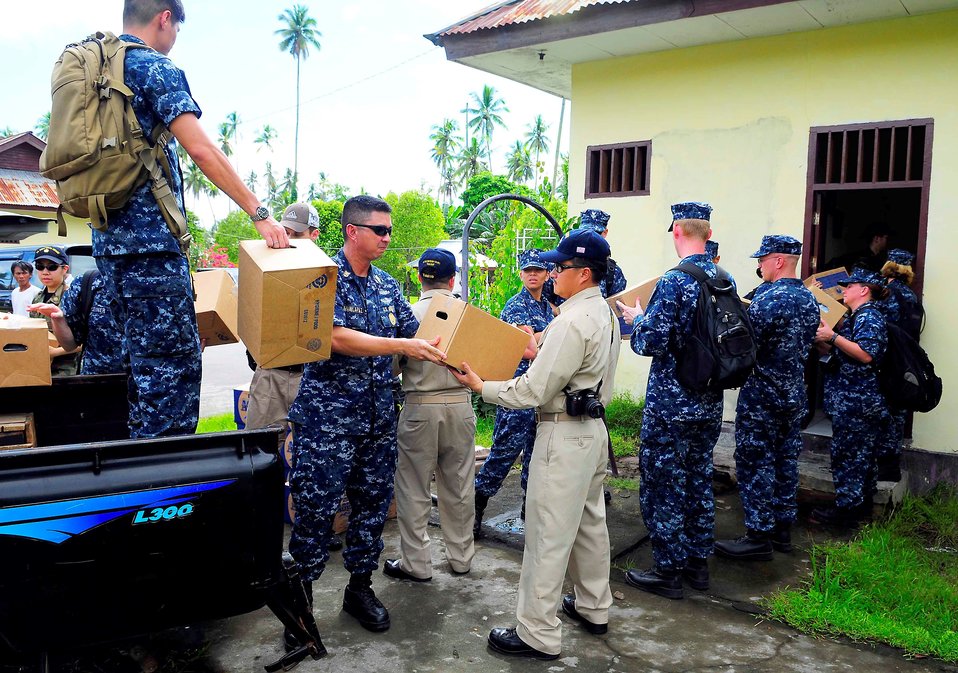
Sailors Offload Donated Personal Hygiene Kits for Children

Sailors from the Military Sealift Command hospital ship USNS Mercy (T-AH 19) offload donated personal hygiene kits for children at the Rumah Sejahtera Bagi Anak Orphanage, during a community service event in support of Pacific Partnership 2010 in Tobelo, Indonesia, on July 14, 2010. Pacific Partnership 2010 is the fifth in a series of annual U.S. Pacific Fleet endeavors conducted in Indonesia as a disaster relief exercise to strengthen regional partnerships.